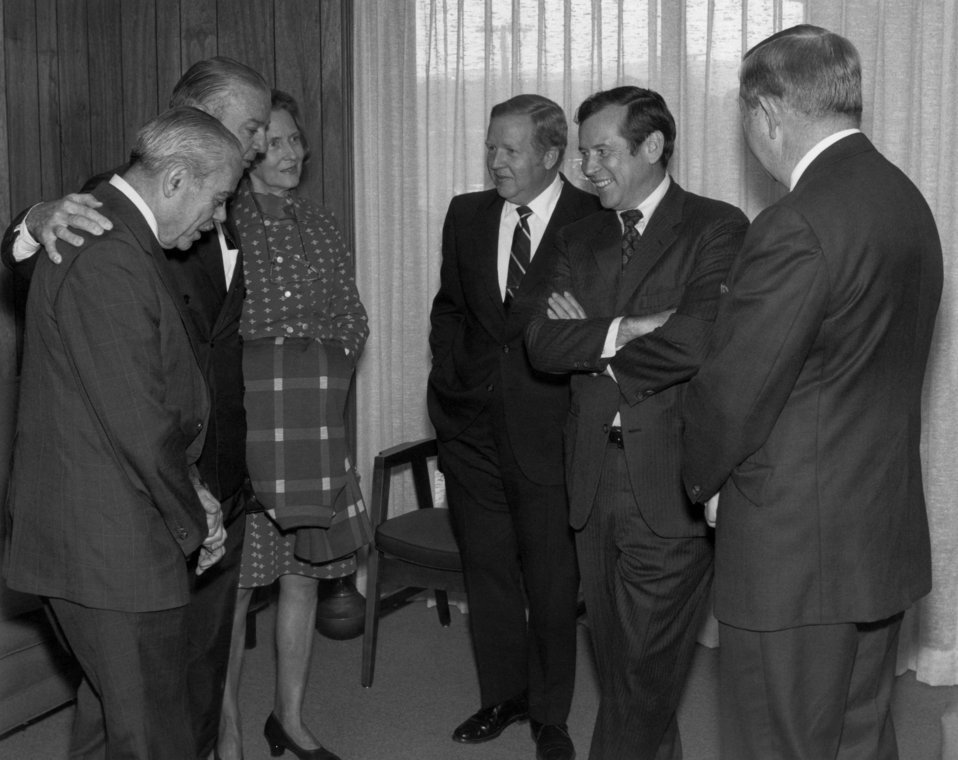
Dedication Ceremony of CSC Executive Seminar Center Oak Ridge

71-239-11 DOE photo by Frank Hoffman

Dedication Ceremony of CSC Executive Seminar Center Oak Ridge Tennessee 10-8-1971